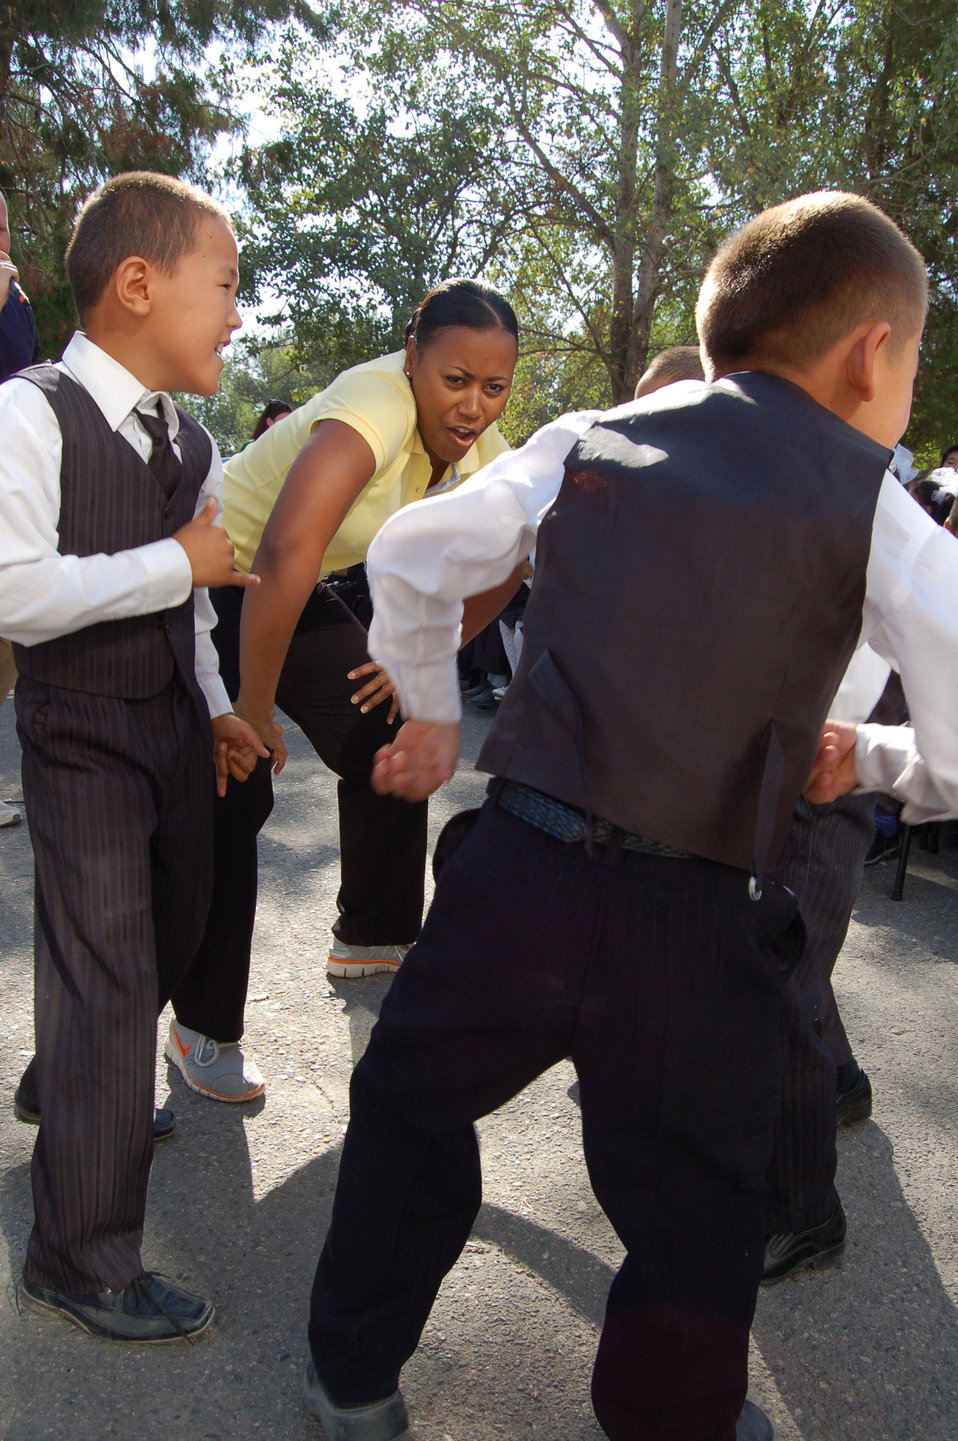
Band members, Kyrgyz citizens share culture through music

Master Sgt. Regina Coonrod sings and dances with two Kyrgyz boys during a Sept. 9 visit to an orphanage in Nizhanchuisk, Krygyzstan. The U.S. Air Force Central Band Yuma performed there during their eight-day tour where they played at six schools, villages and orphanages and four concerts on base.